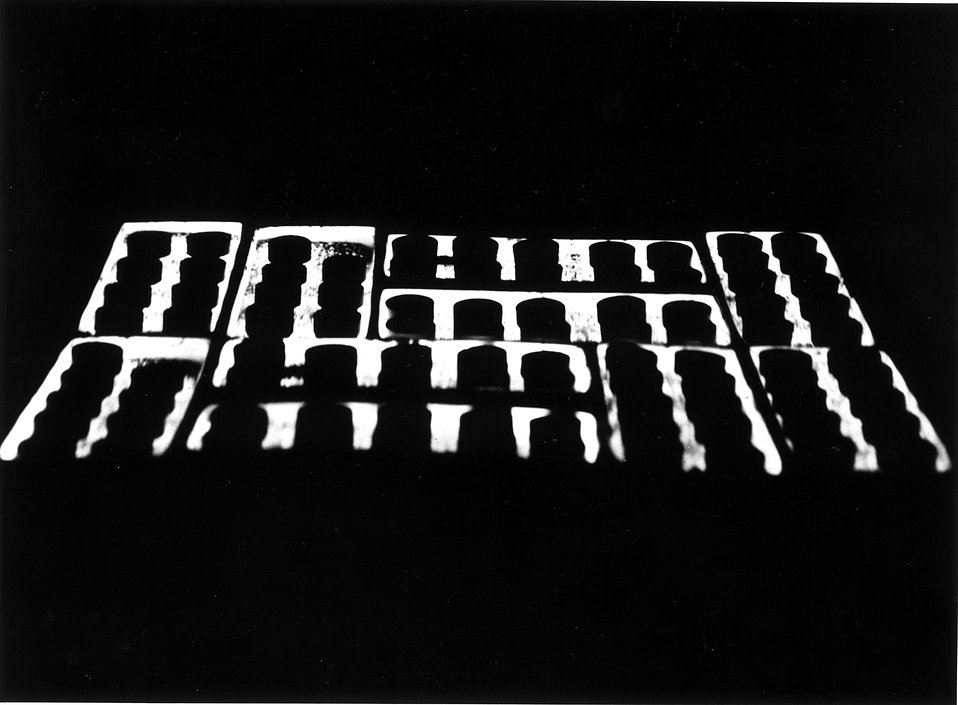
Glow of Cerenkov radiation from bank of strontium titivate pellets. c. undated